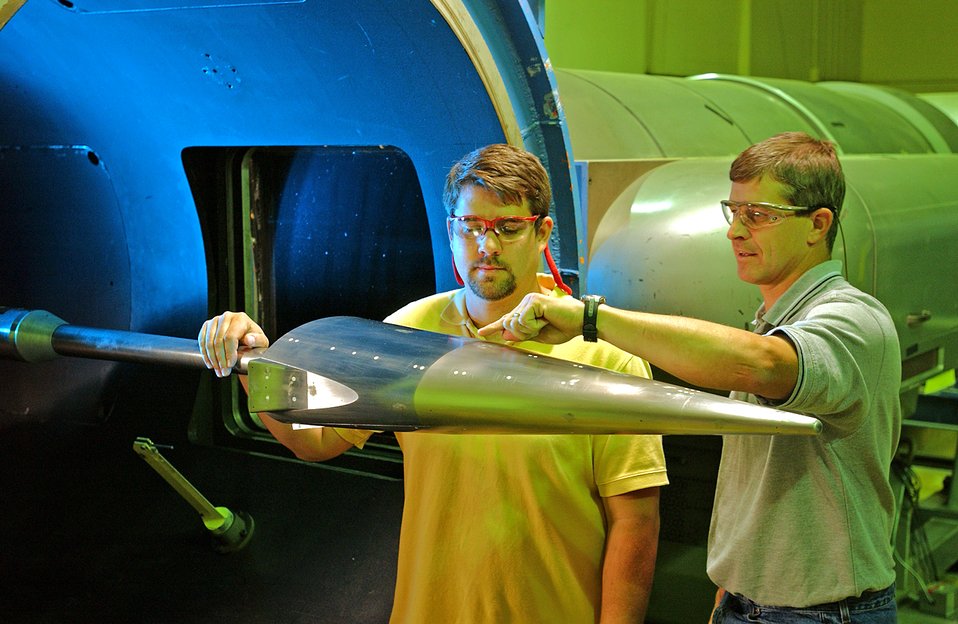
Arnold test

ARNOLD AIR FORCE BASE, Tenn. (AFPN) -- Test engineers Joe Norris (left) and John Lafferty ready a Hypersonic Technology Vehicle-1 model prior to a Hypervelocity Wind Tunnel 9 operation.